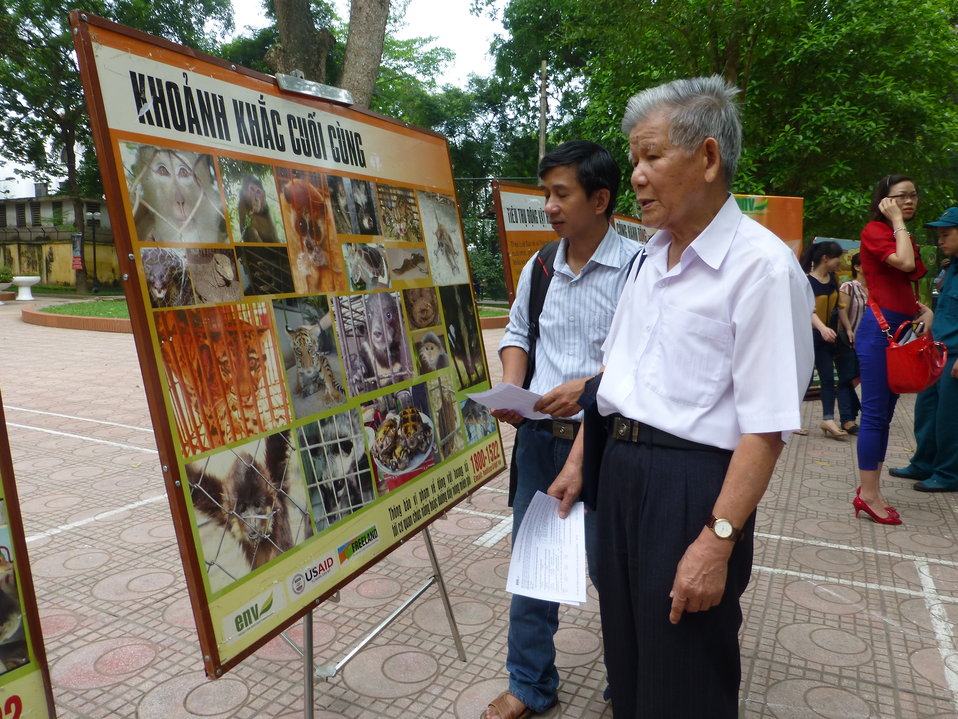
USAID Supports International Day for Biological Diversity in Hanoi